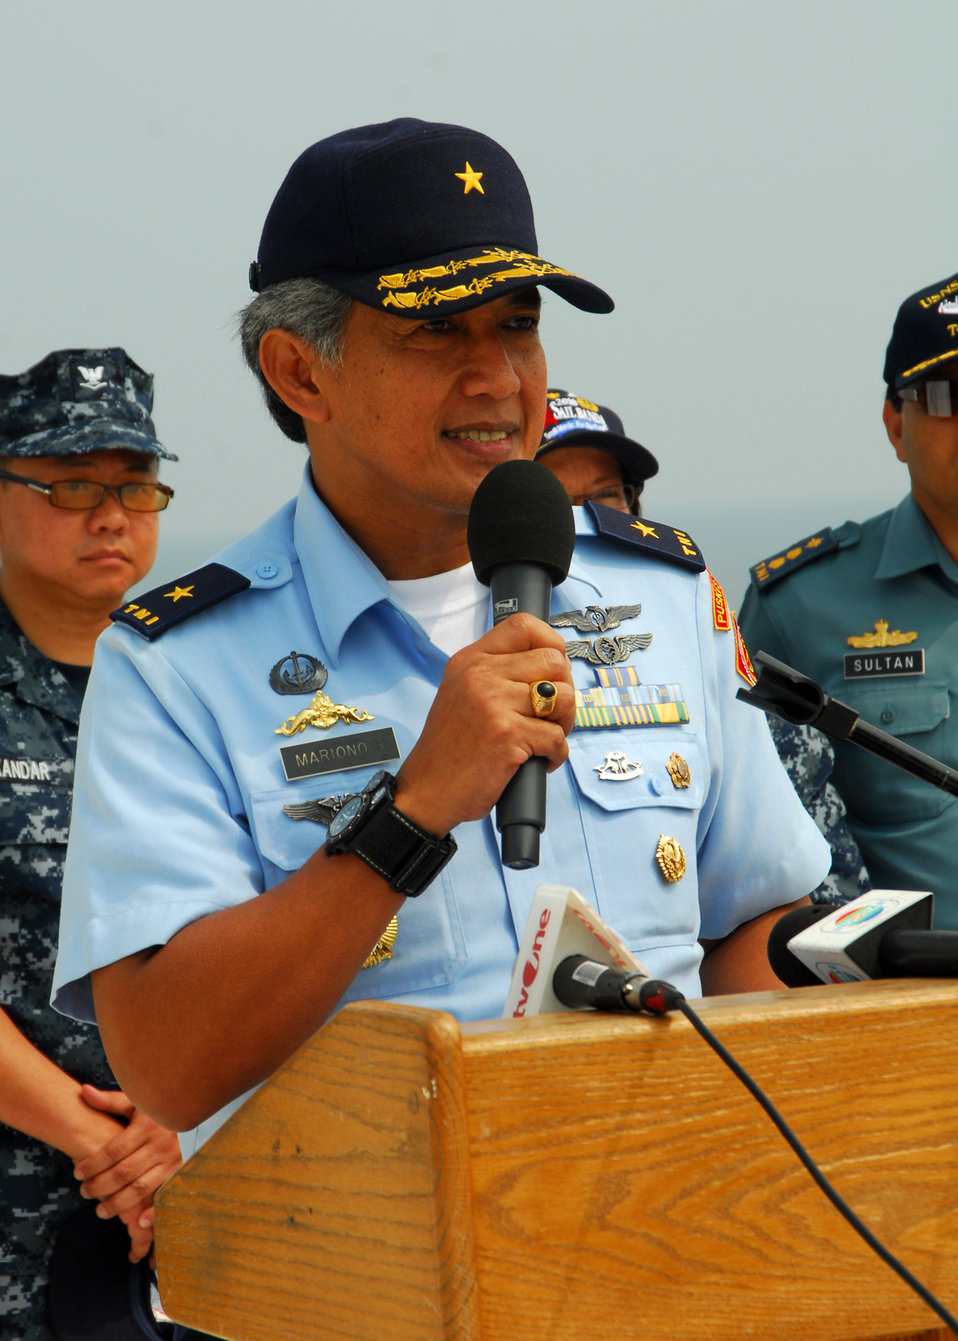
Tentara National Indonesia Surgeon General Marsekal Muda Mariano Delivers Remarks During a Media Availability Tour

Tentara National Indonesia Surgeon General Marsekal Muda Mariano gives remarks during a media availability tour aboard the Military Sealift Command hospital ship USNS Mercy (T-AH 19) during Pacific Partnership 2010 on July 7, 2010. Mercy is en route to its first stop in Indonesia during the fifth in a series of annual U.S. Pacific Fleet humanitarian and civic assistance endeavors to strengthen regional partnerships.